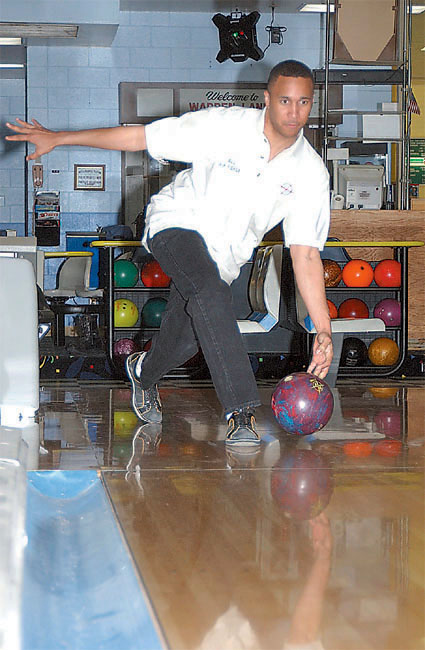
Air Force teams win armed forces bowling championships

F.E. WARREN AIR FORCE BASE, Wyo. -- First Lt. Rickie Banister, a 319th Missile Squadron missileer here, bowled over the competition during the 2005 Armed Forces Bowling Championships held in Dallas. He won the men's division with a 24-game total of 4,847.